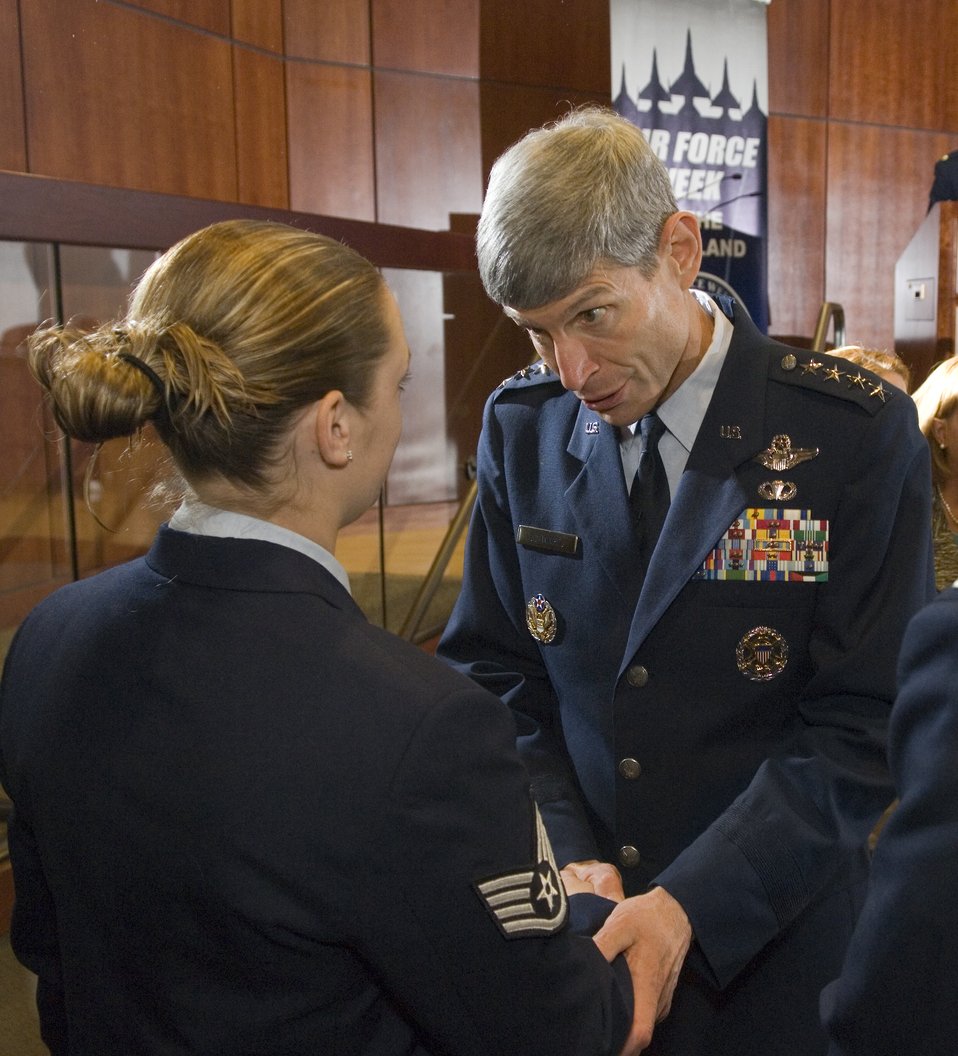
Gen. Schwartz outlines vision in speech to Omaha leaders

Gen. Norton A. Schwartz thanks Staff Sgt. Melanie Manley for her service during the Executive Leadership Forum Aug. 15 at Bellevue University in Nebraska during Air Force Week in the Heartland. Sergeant Manley is a security forces specialist who deployed two times to Iraq and lost her right index finger to an explosive device that destroyed the Humvee she was in.